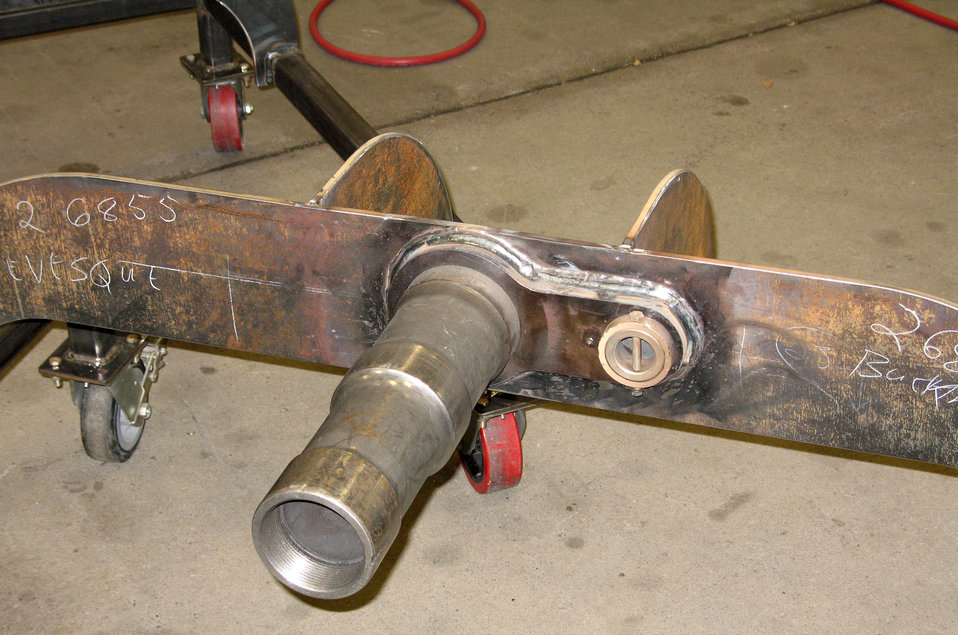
Idea nets maintenance Airman $10,000

The nose wheel trainers designed by Master Sgt. Barry Buchmiller, pictured here, will save the Air Force money by freeing up C-17 Globemaster IIIs from ground training. The trainers are used to help Airmen learn how to change the wheels on the nose landing gear assembly. Sergeant Buchmiller is assigned to the 62nd Aircraft Maintenance Squadron at McChord Air Force Base, Wash.